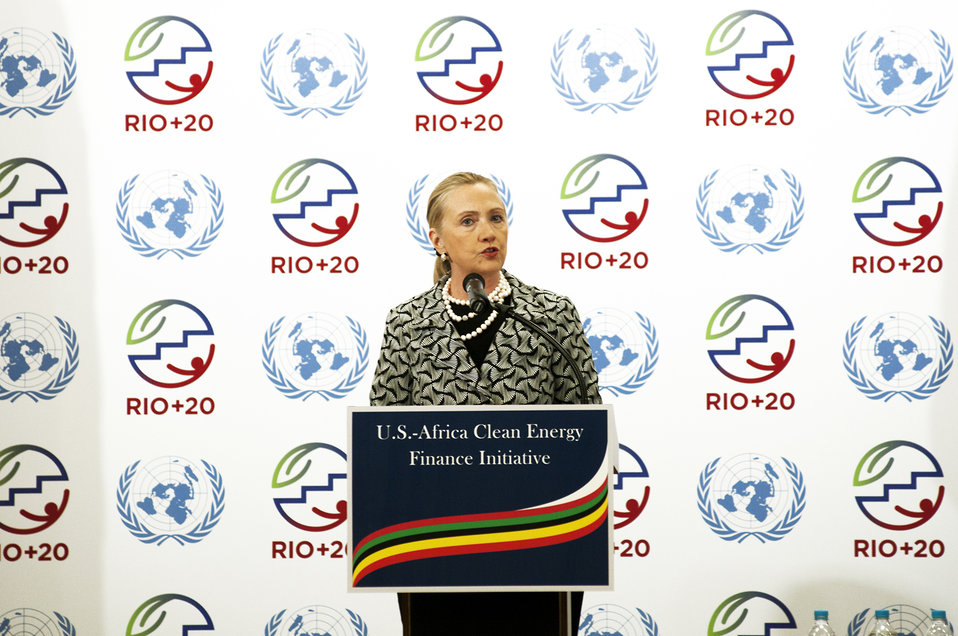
Secretary Clinton Delivers Remarks During the U.S.-Africa Clean Energy Finance Initiative Launch

U.S. Secretary of State Hillary Rodham Clinton delivers remarks during the U.S.-Africa Clean Energy Finance Initiative launch in Rio de Janeiro, Brazil during the Rio 20 Conference on June 22, 2012.